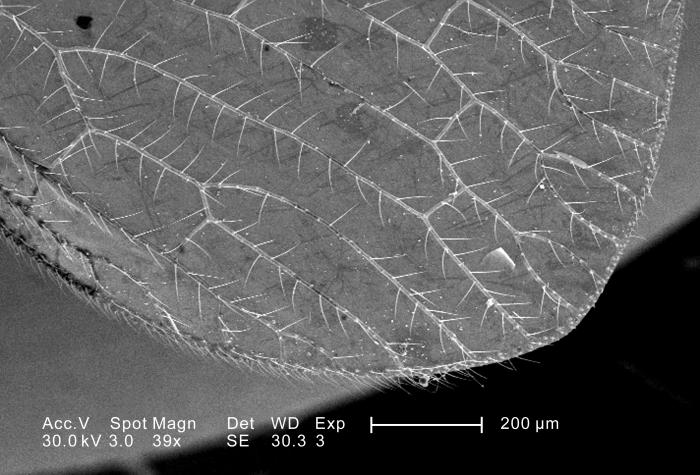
This scanning electron micrograph (SEM) depicted a highly magnified view of the wing of an unidentified green-colored flying insect found outside on the ground in the Decatur, Georgia suburbs; Magnified 39x. The debris covering the organism is mainly vegetative in nature, composed primarily of pollen granules, and disintegrated plant fibers.